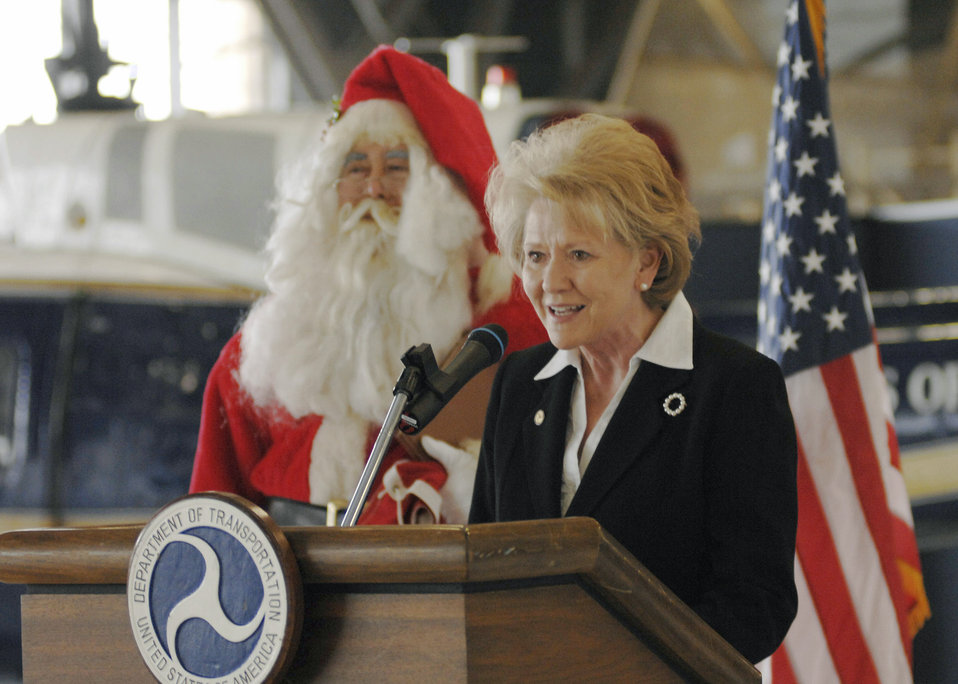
Transportation secretary opens military airspace for Santa

Secretary of Transportation Mary E. Peters speaks to Airmen and their families Dec. 18 at Andrews Air Force Base, Md. She spoke about Santa Claus and how the military is opening up airspace called